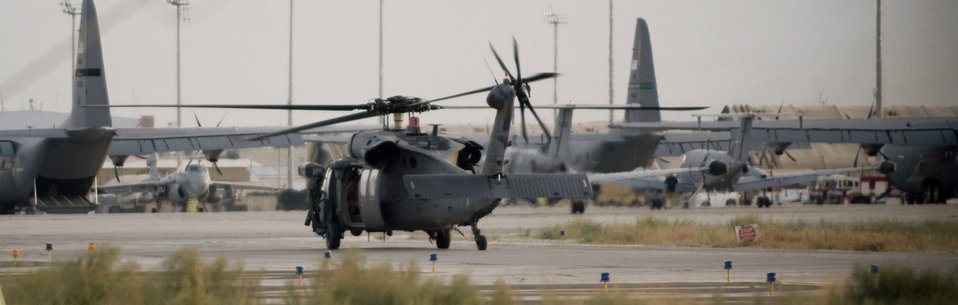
Flying with the Pave Hawks

An HH-60G Pave Hawk helicopter taxis to the launch pad Aug. 2 at Bagram Air Base, Afghanistan. The Pave Hawk is currently the primary combat search and rescue platform, and is capable of performing its mission even in adverse conditions.